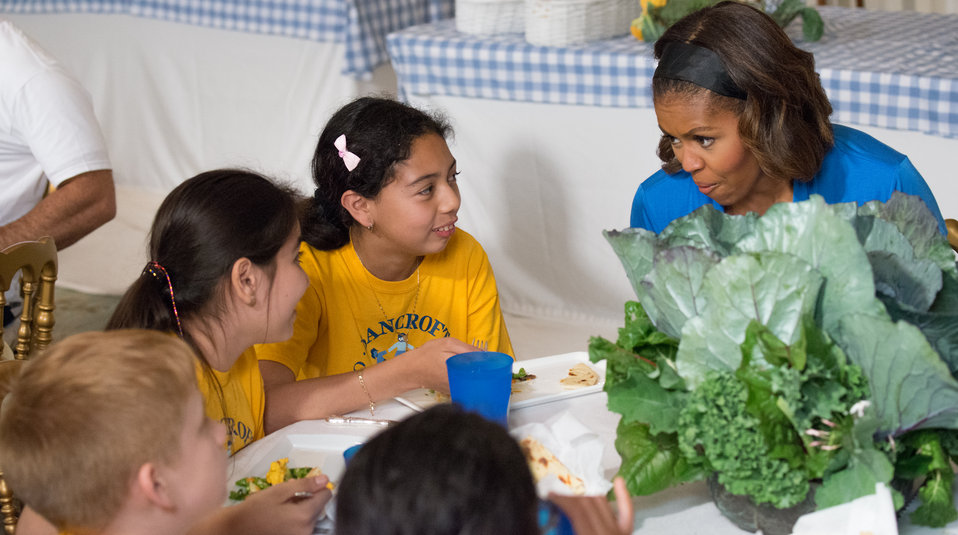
First Lady Michelle Obama (right) tells what some her favorite foods are to Marlene Cedillos (center) and her classmates from Bancroft Elementary while they eat a White House home grown garden salad in the White House State Dining Room, in Washington, D.C. on Thursday, Jun. 12, 2014. Washington, D.C. students from Cleveland Elementary School, Friendship Public Charter School, Kimball Elementary School, Bancroft Elementary School, Harriet Tubman Elementary School, who helped plant the White House Kitchen Garden in the spring, and now enjoys the summer harvest of the crop.